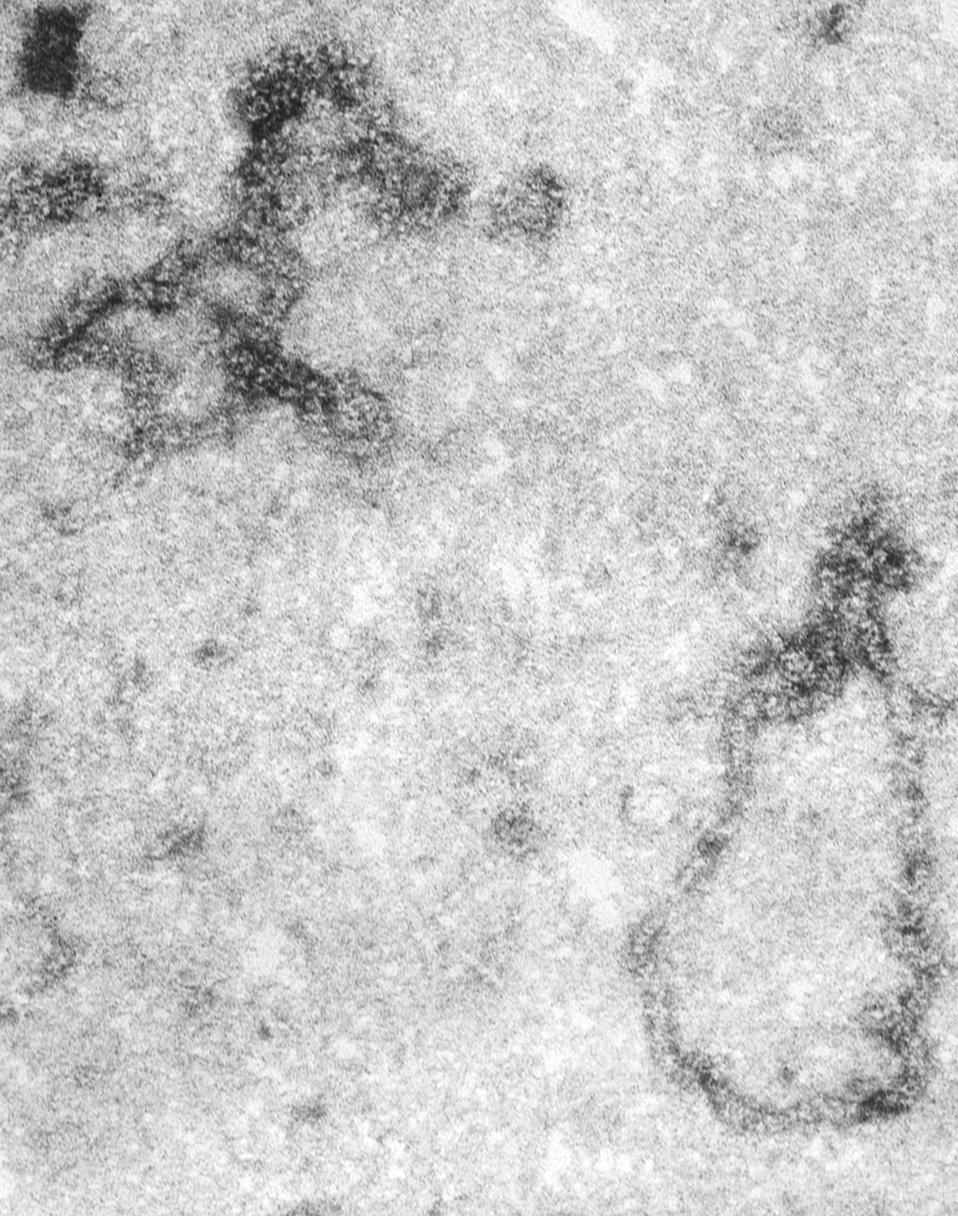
This negatively-stained transmission electron micrograph (TEM) revealed the presence of numerous California encephalitis virus virions. Contained within its enveloped capsid, the genome of this Bunyaviridae family member consists of three segments of negative-sense single-stranded RNA ((-)ssRNA).